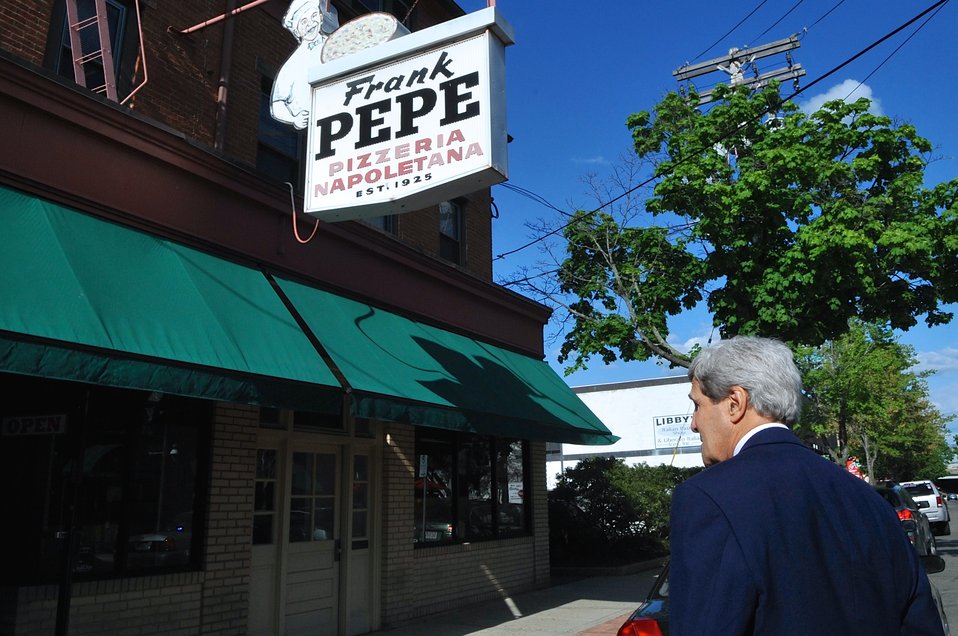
Secretary Kerry Enters Famous New Haven Pizza Shop

U.S. Secretary of State John Kerry enters the famed New Haven, Connecticut, pizza shop Frank Pepe's during an impromptu stop after the 1966 Yale University graduate addressed Class Day ceremonies on May 18, 2014.